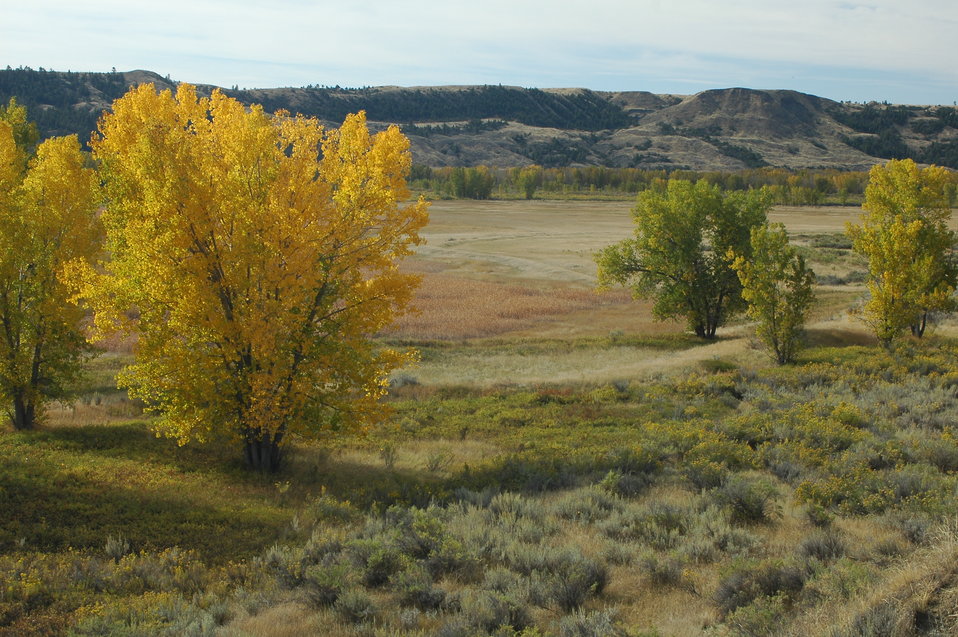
Autumn Vista

A scene from the west end of CMR Refuge looking across the Missouri river bottom.